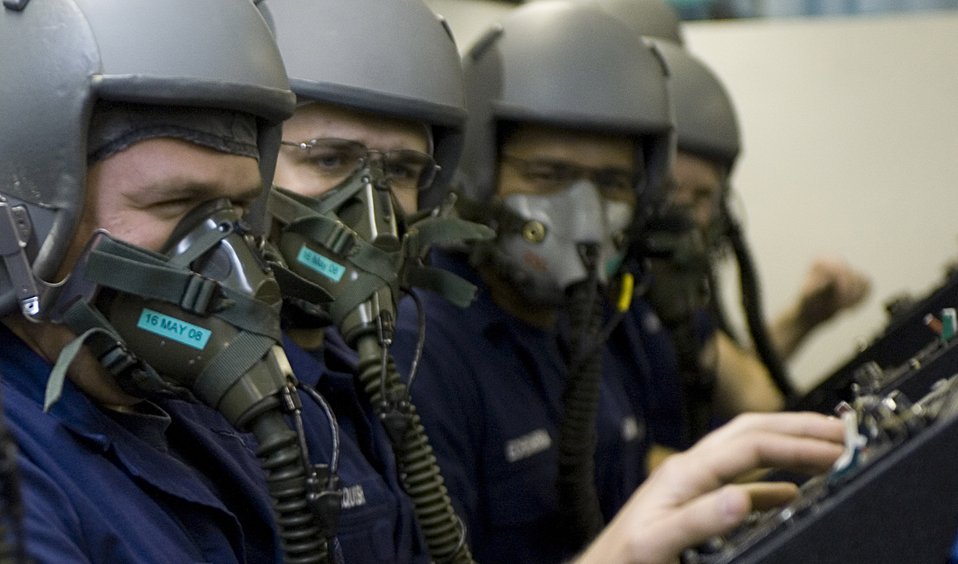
Coast Guard students train in altitude chamber

Airman Larry Kohl (left), a Coast Guard aviation maintenance technician student from Elizabeth City, N.J., Coast Guard Station, try's to speak to fellow students while performing a mask test during altitude chamber training March 23 at Langley Air Force Base, Va. While in the altitude chamber students are exposed to atmospheric conditions at 25,000 feet. Without the aid of an oxygen mask they experience symptoms of hypoxia, an oxygen deficiency of the tissue and blood cells that causes impairment of function at high altitudes.